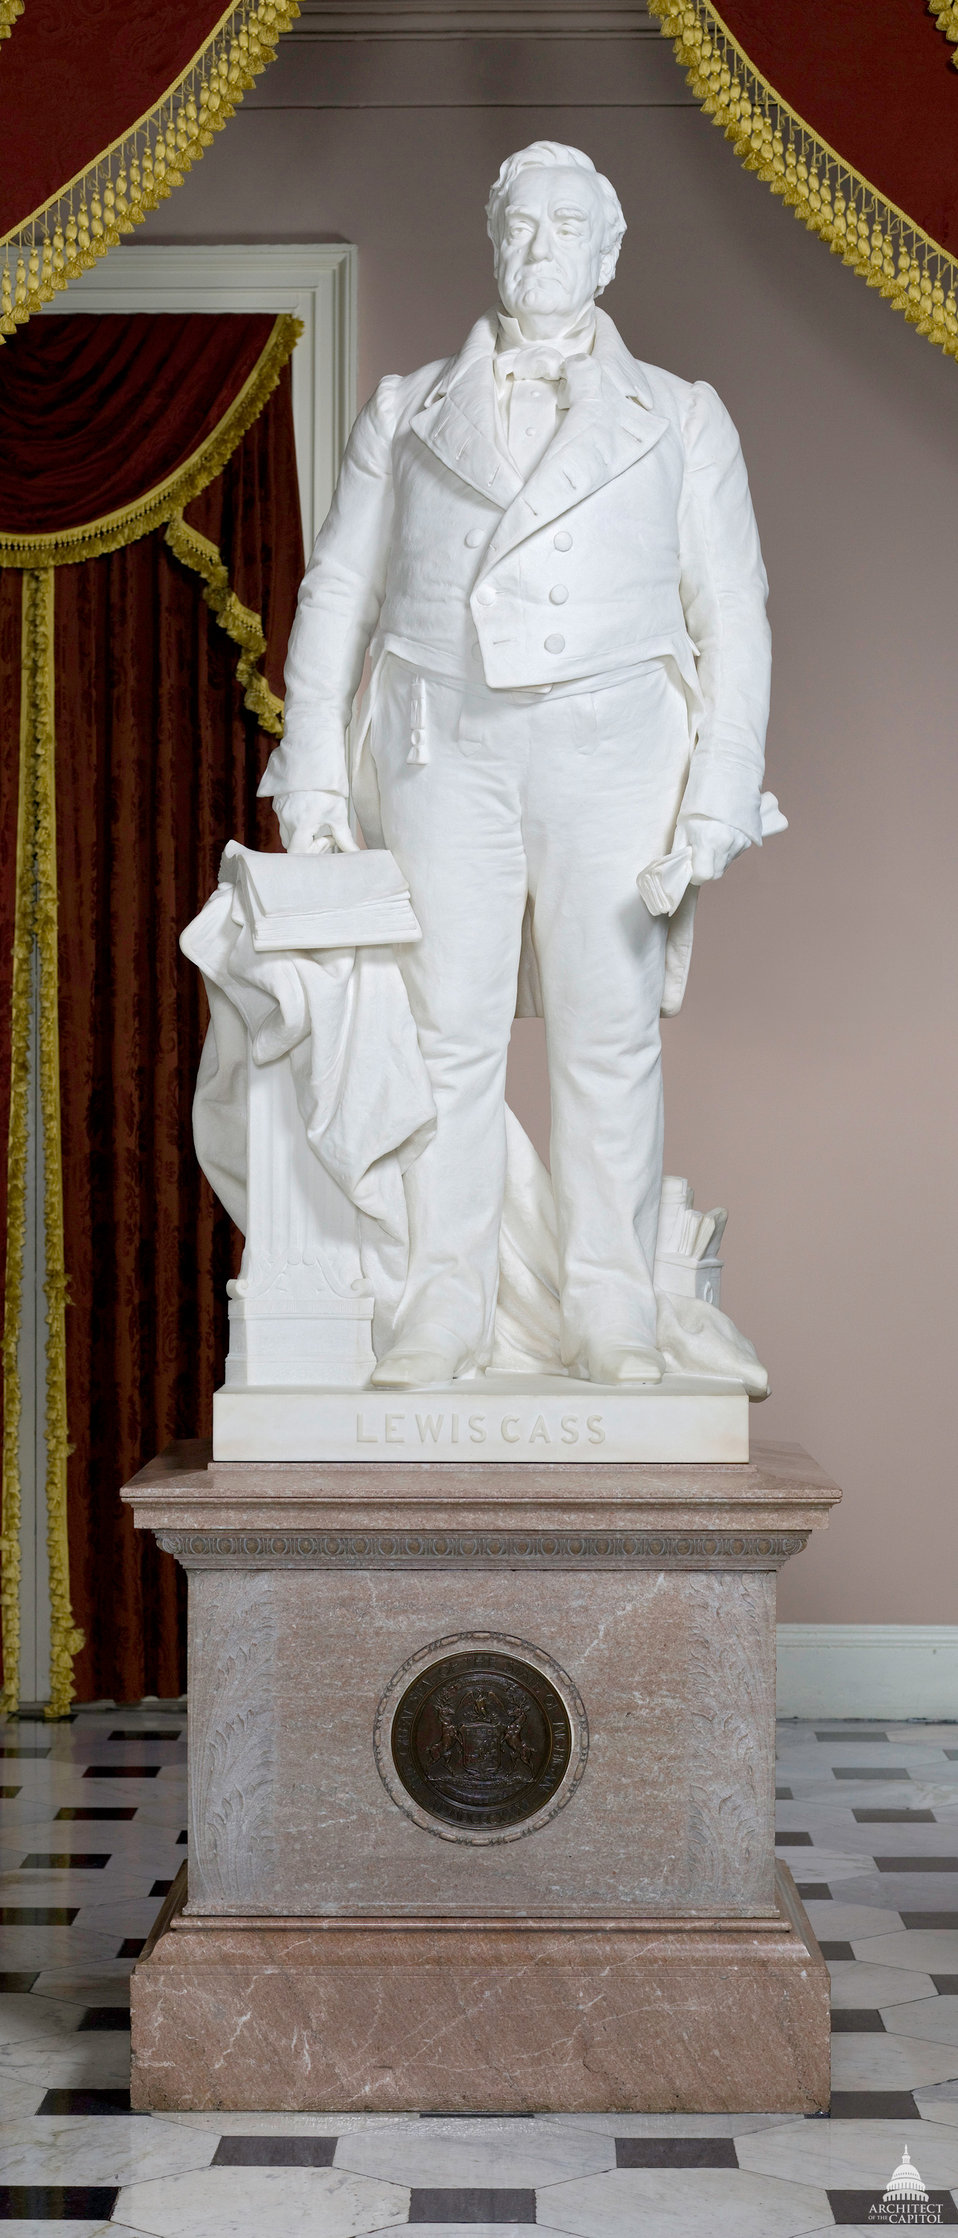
Lewis Cass Statue

Lewis Cass (1782-1866)
Michigan
Marble by Daniel Chester French
Given in 1889
National Statuary Hall
U.S. Capitol